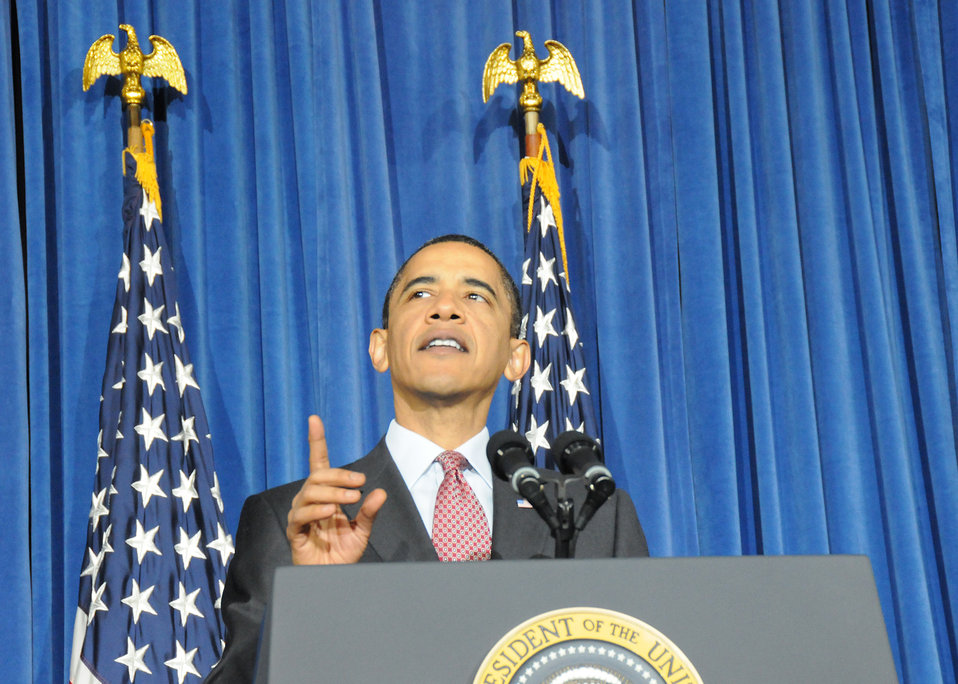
President Barack Obama addresses the challenges, innovations, and opportunities surrounding land conservation and the importance of reconnecting Americans to the outdoors at the opening of the White House Conference on America’s Great Outdoors held at the Department of Interior on Friday, April 16, 2010. USDA photo 10di1316-215